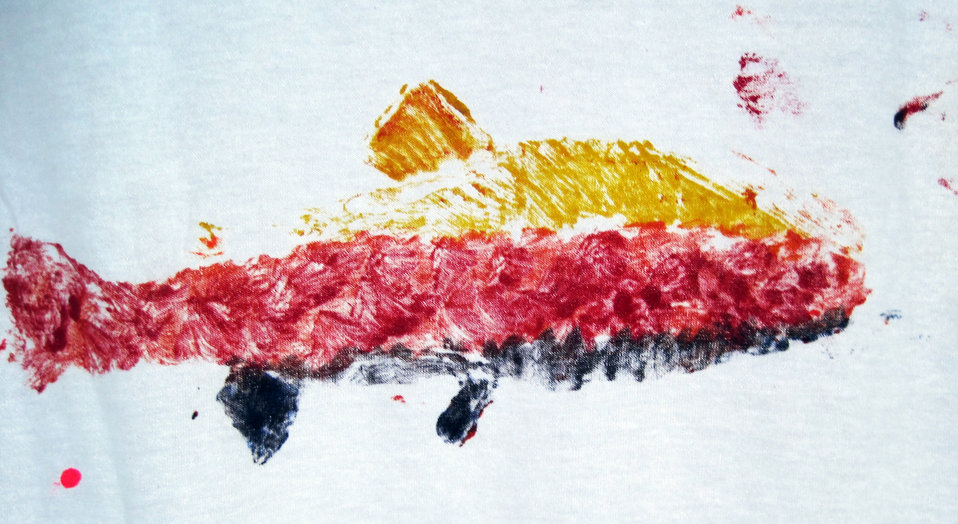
Celebrating the salmon – 2013 Salmon Festival at Stanislaus River Parks

Another colorful t-shirt featuring the salmon is displayed while it dries in the sun. Young fans of the Chinook salmon celebrated the famous fish in drawings, paintings and hand-painted t-shirts during the fifth annual Salmon Festival, Oct. 26, 2013 at Stanislaus River Parks, the U.S. Army Corps of Engineers facility in Knights Ferry, Calif.